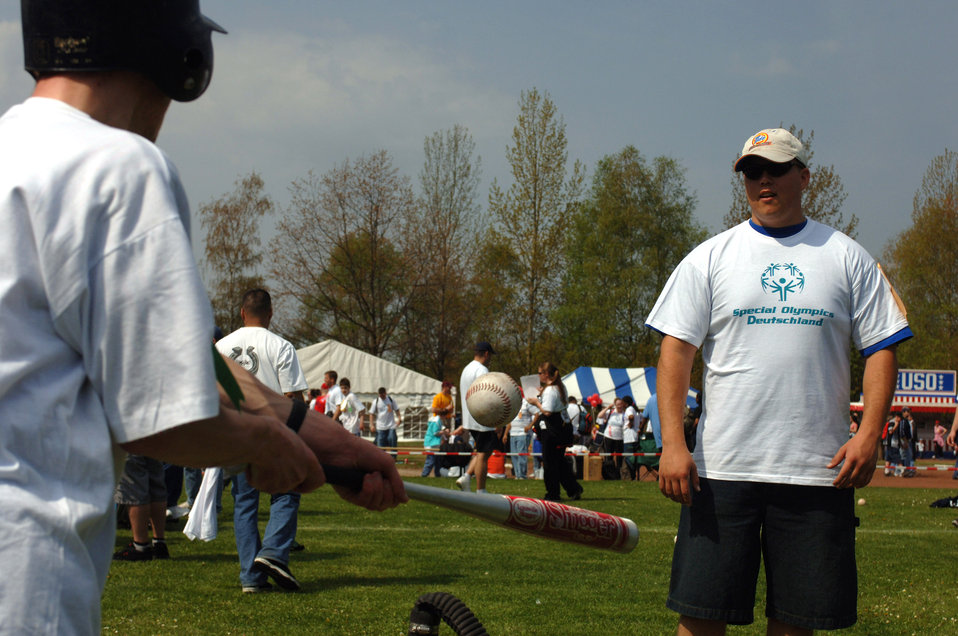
Volunteer spirit at Special Olympics

Senior Airman Sean Rabbie watches a Special Olympics athlete connect with a baseball at Enkenbach-Alsenborn, Germany, on Wednesday, May 3, 2006. This is the 29th time the games were held in this part of Germany. Volunteers usually outnumber the athletes. Airman Rabbie is with the 435th Communications Squadron at Ramstein Air Base, Germany.